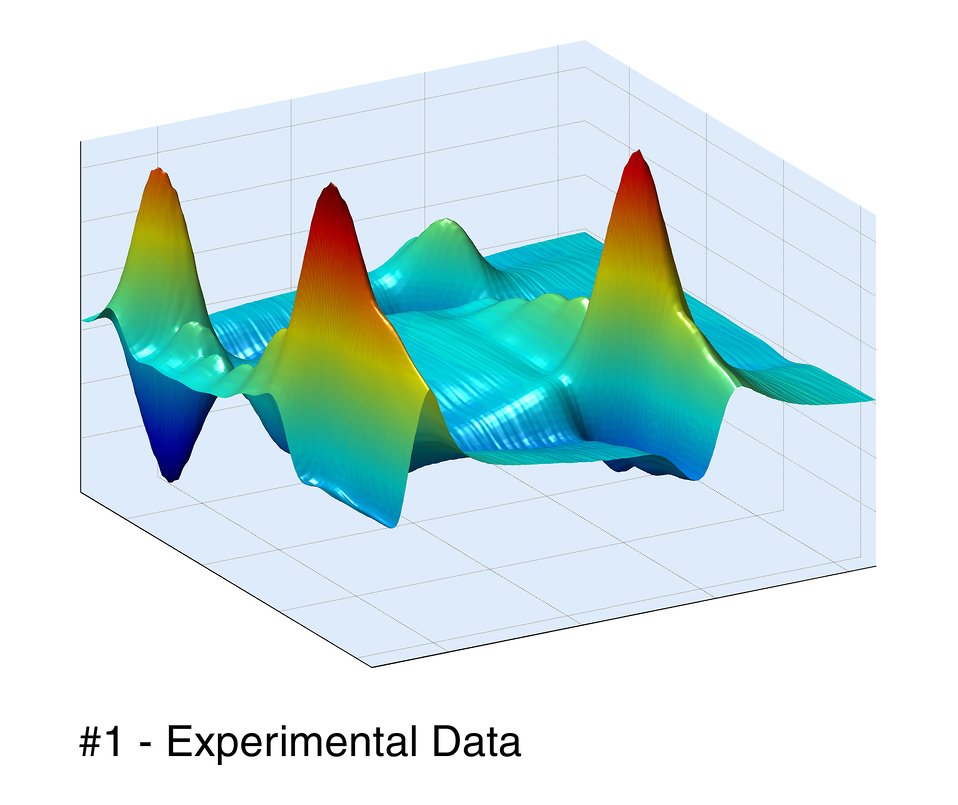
Semiconductors, selective behavior

Physicists at JILA have confirmed subtle 'collective behavior' among electronic structures in semiconductors, research that may help improve the design of optoelectronic devices.

In this first image of three (showing new experimental data), matching large peaks in the foreground, showing energy intensity ranging from low in blue to high in red, indicate that pairs of large electronic particles called excitons are oscillating in concert as they absorb ultrafast laser light and emit energy at various frequencies.